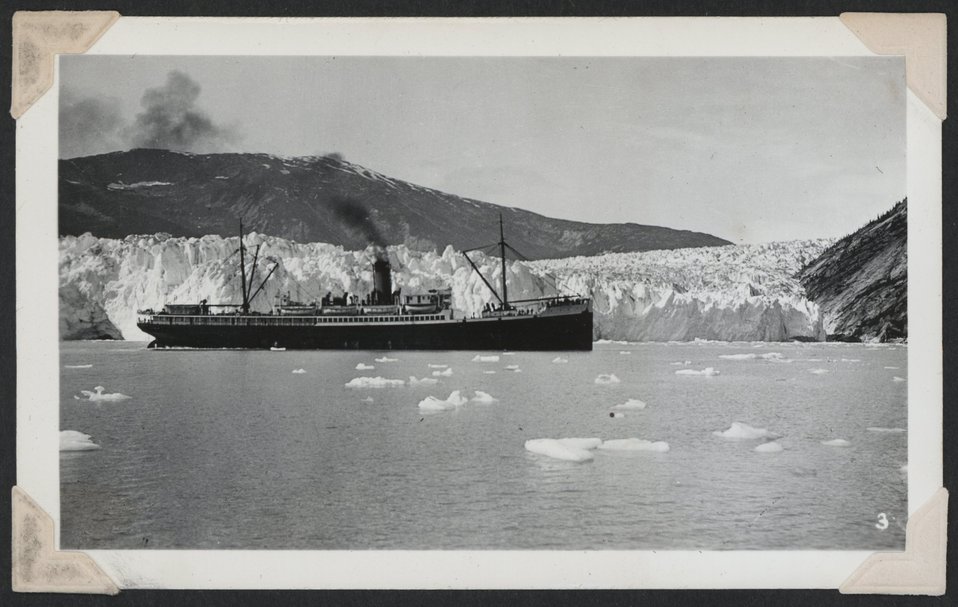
Tourist steamer at Taku Glacier.